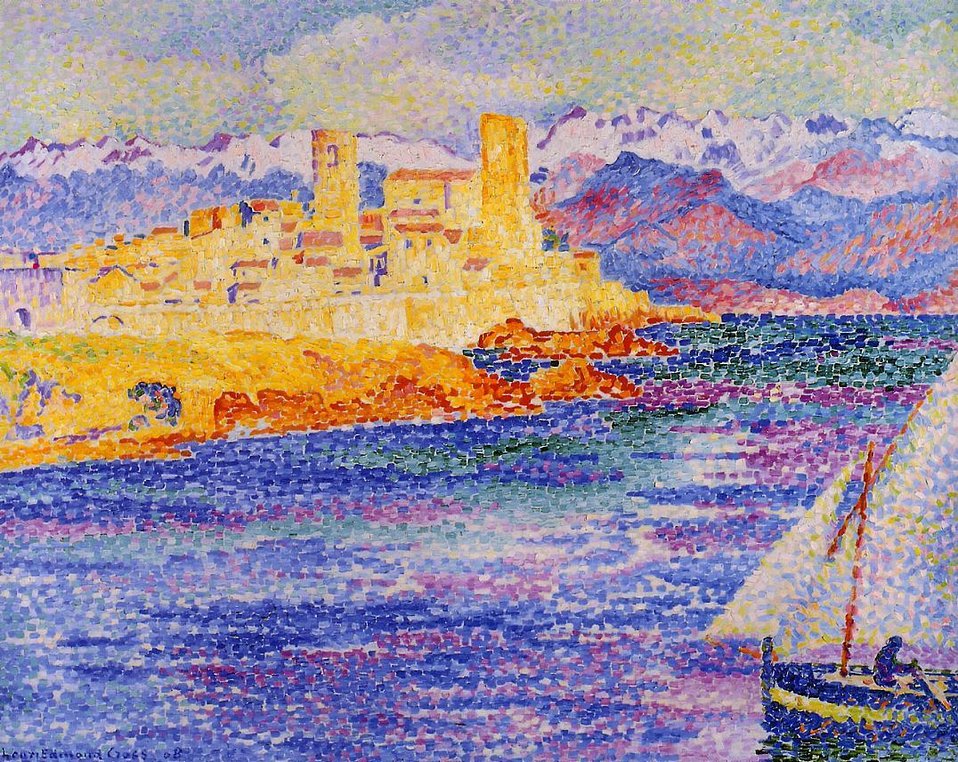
Antibes, Cross